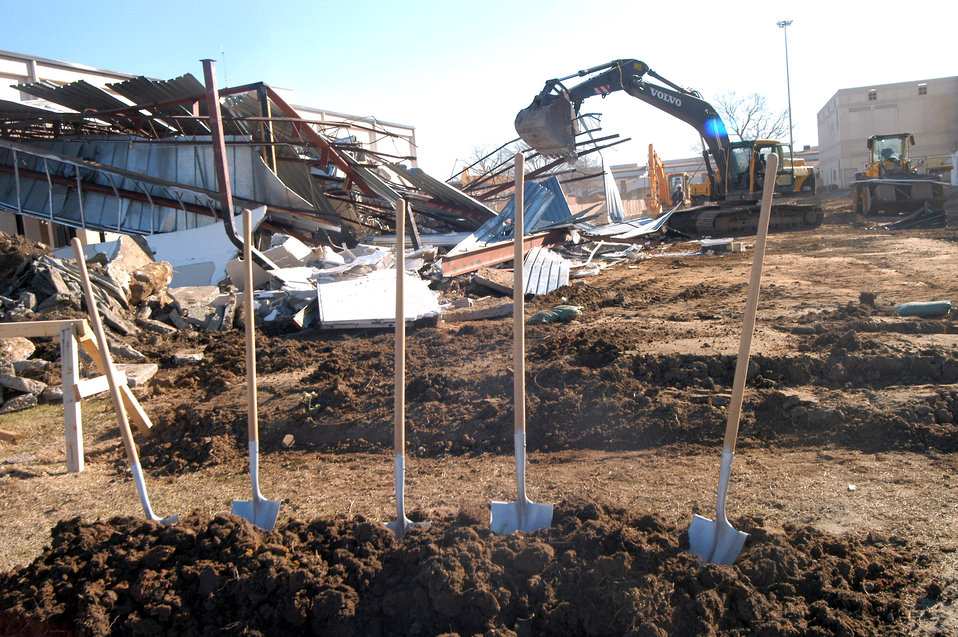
$21 million software facility project underway at Robins AFB

Air Force officials held a groundbreaking ceremony for a new, $21 million software support facility Feb. 19 at Robins Air Force Base, Ga. The 70,000 square-foot facility is targeted for occupation by Jan. 2010. The facility will join three existing base software facilities to form a software support complex.